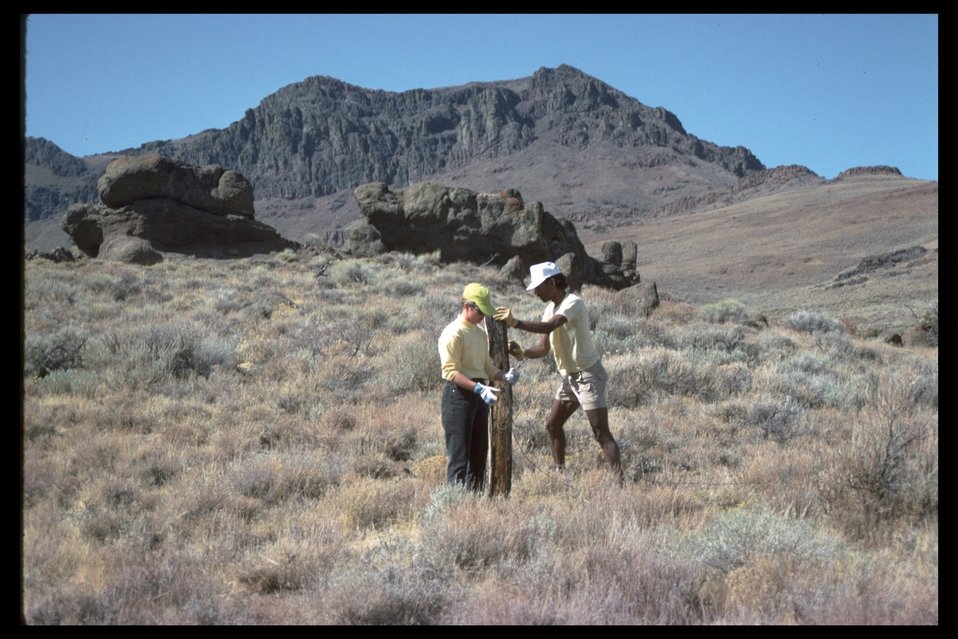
Pueblo Mountain WSA sieera club volunteers (2) remove fence. (WSA 2-81)